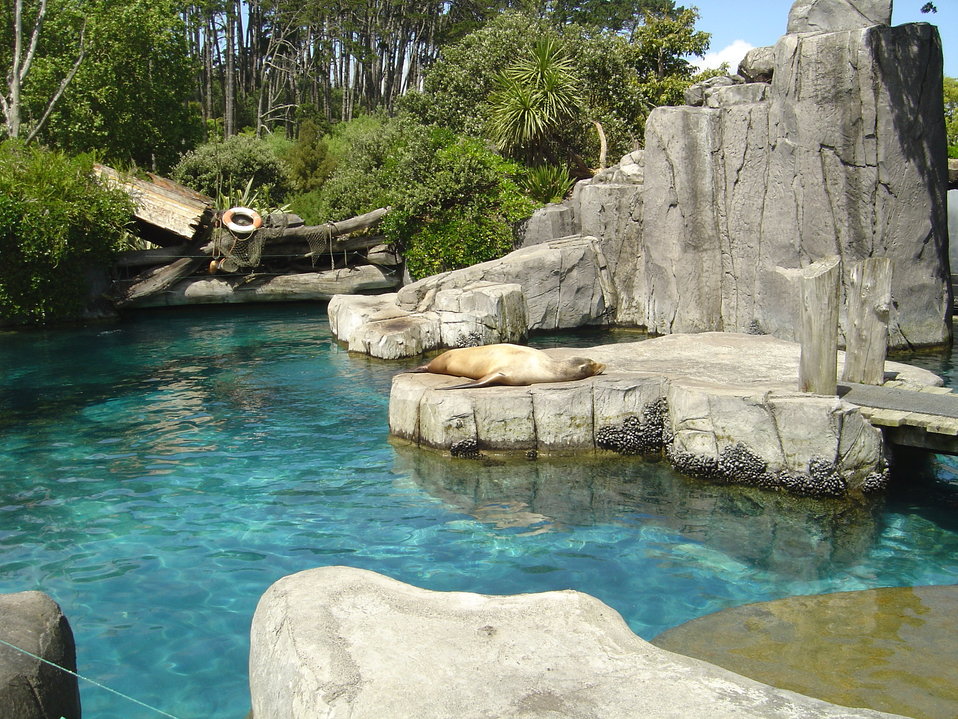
For addition to the Auckland Zoo page or as otherwise required.